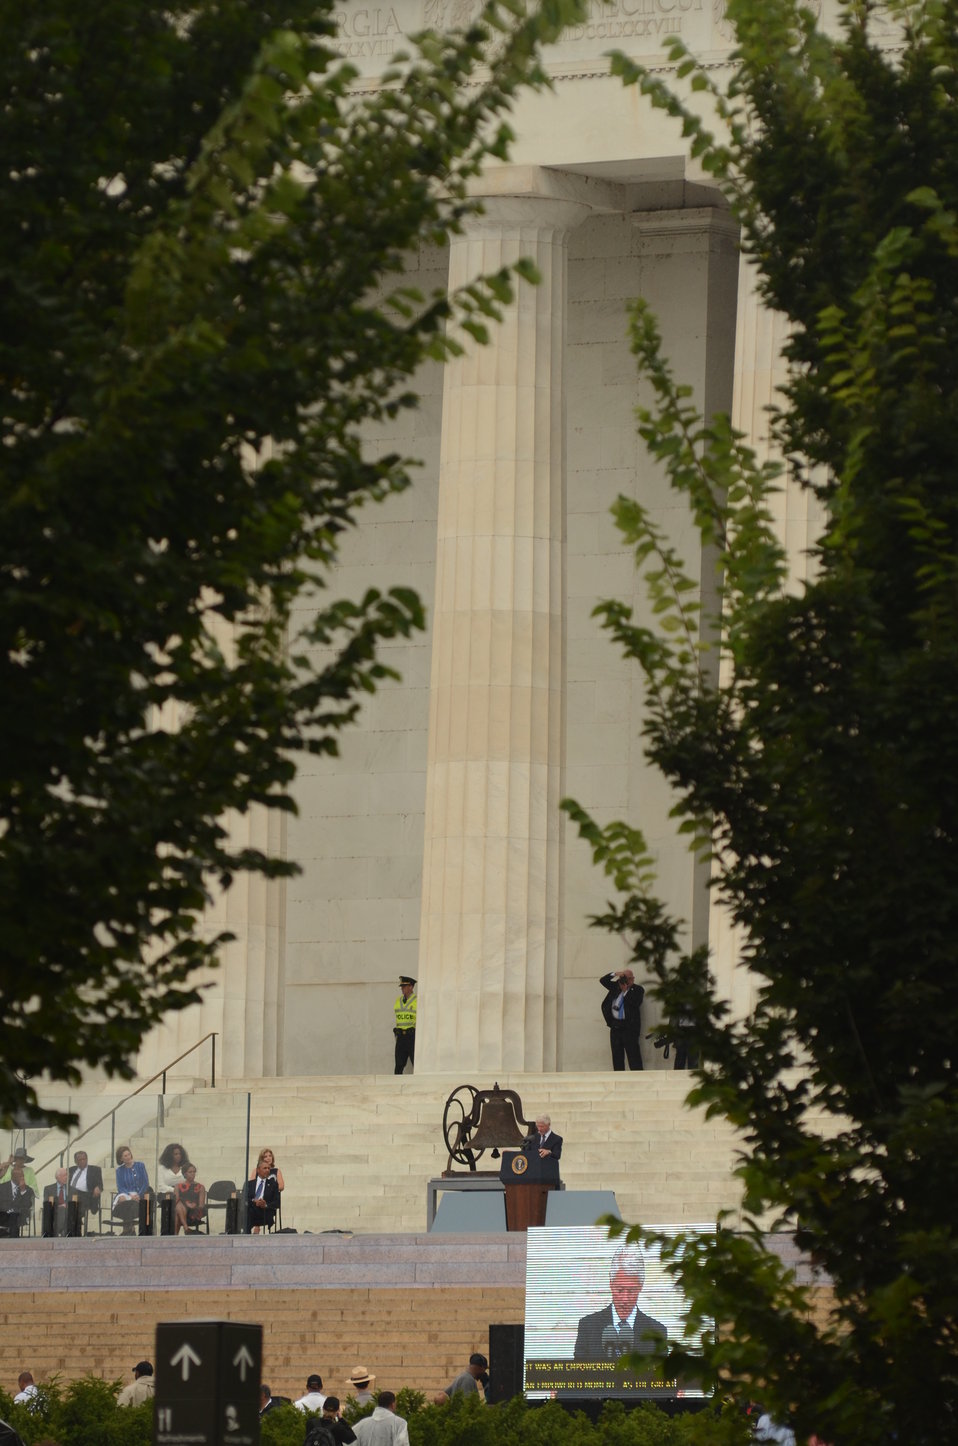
Former President Bill Clinton speaks to marchers at the Lincoln Memorial for the March on Washington, D.C., on Wed., Aug. 28, 2013.